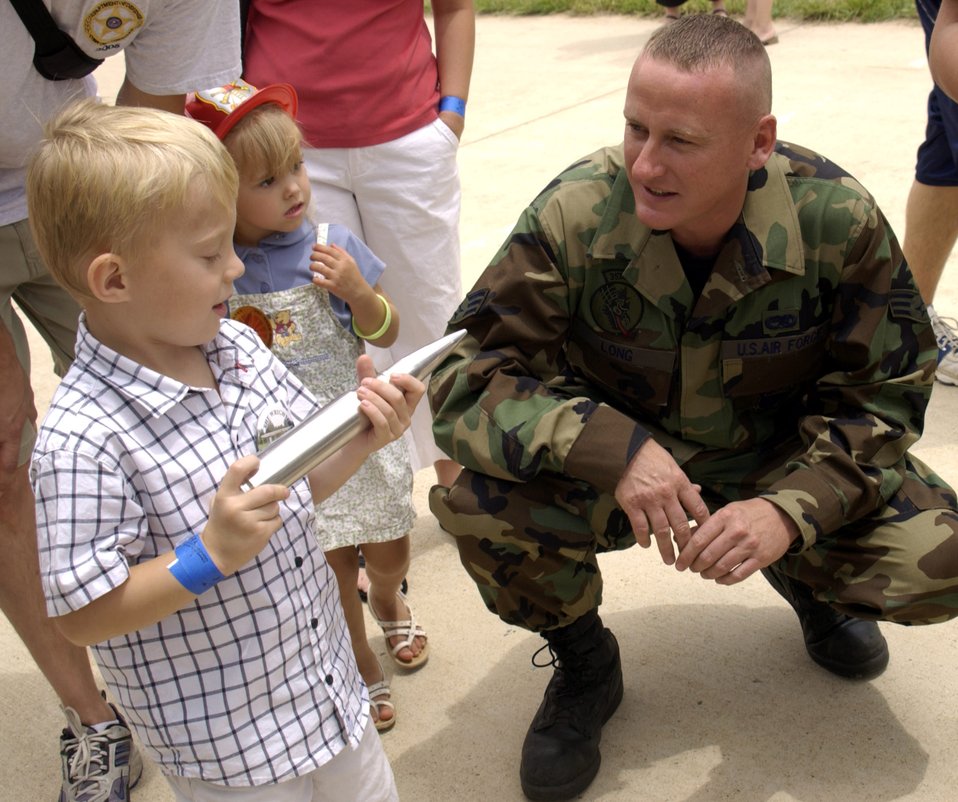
National Air and Space Museum family day wows visitors

Senior Airman Nathan Long shows several visitors the munitions used by the A-10 Thunderbolt II during the